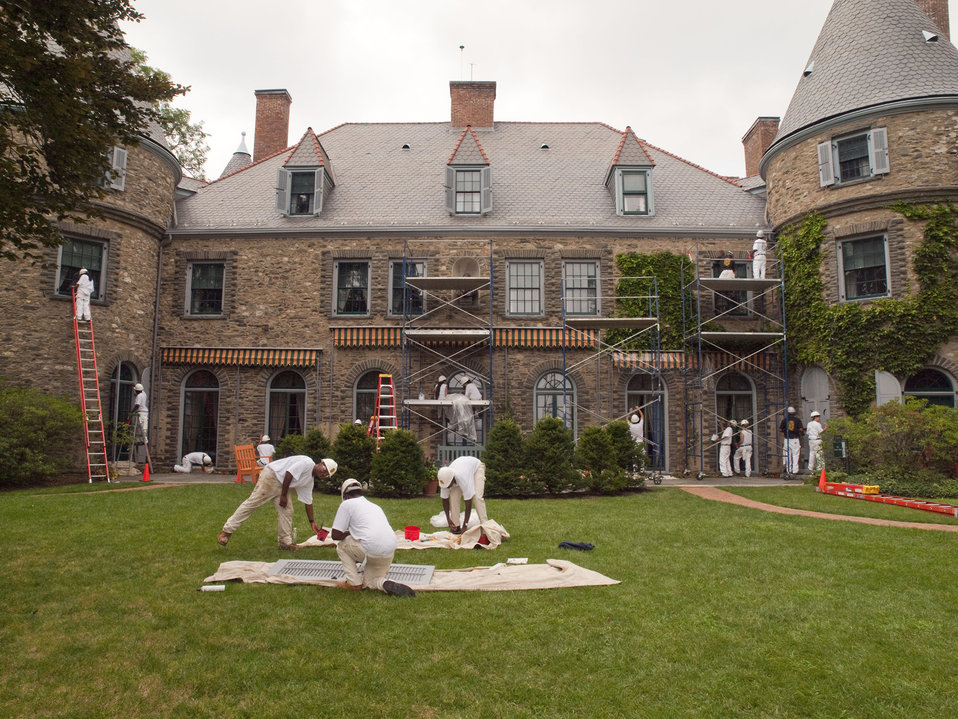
Job Corps students help to restore Grey Towers National Historic Site. $2,440,000 in Recovery Act funds were allocated to repair and refurbish the house and grounds of the ancestral home of the first Chief of the Forest Service and two-term Pennsylvania governor Gifford Pinchot on Tuesday August 3, 2010 in Milford, PA. This project at the 123-year-old site repairs various deficiencies with the buildings and grounds, restores areas of the historic landscape, improves visitor safety and site security, provides a more sustainable facility, and enhances the visitor experience. It helps to ensure the historic site is maintained for years to come.